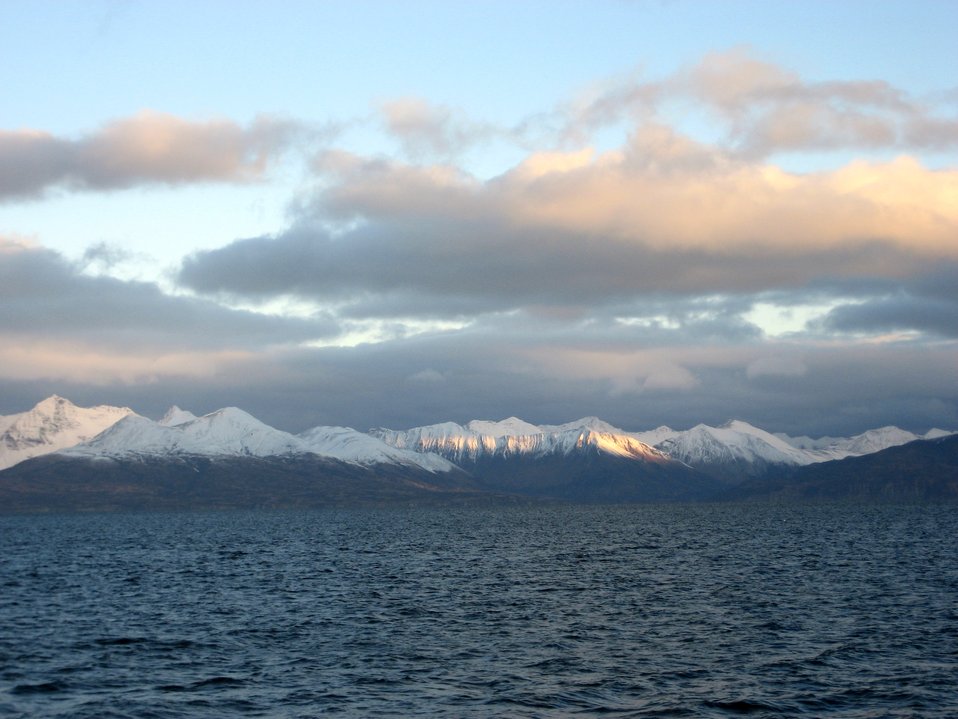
A scene along the Alaska Peninsula.